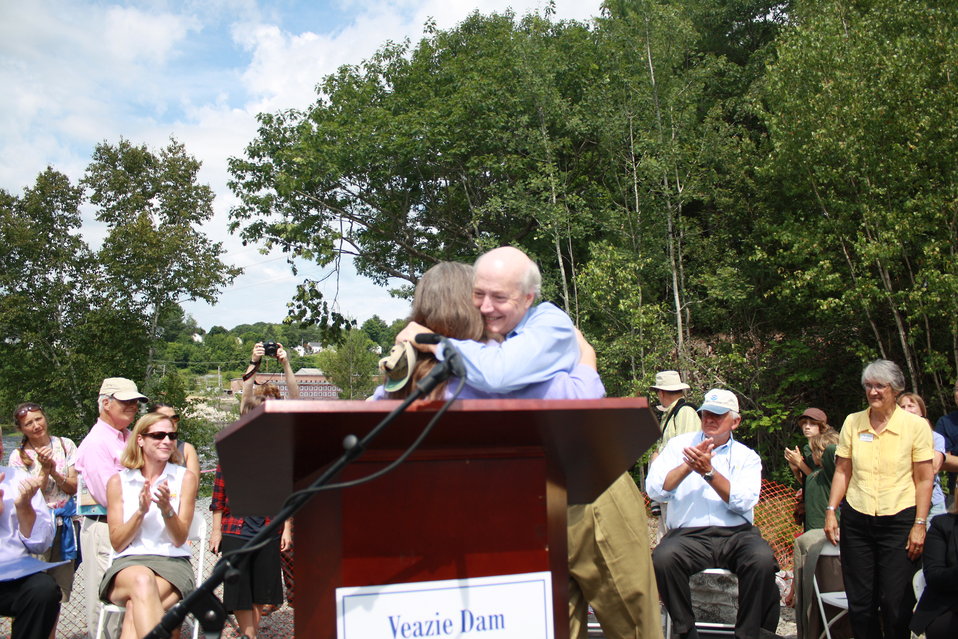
Veazie Dam Removal

Laura Rose Day, Executive Director of the Penobscot River Restoration Trust, hugs Andy Goode, Vice President of U.S. Programs for the Atlantic Salmon Federation.